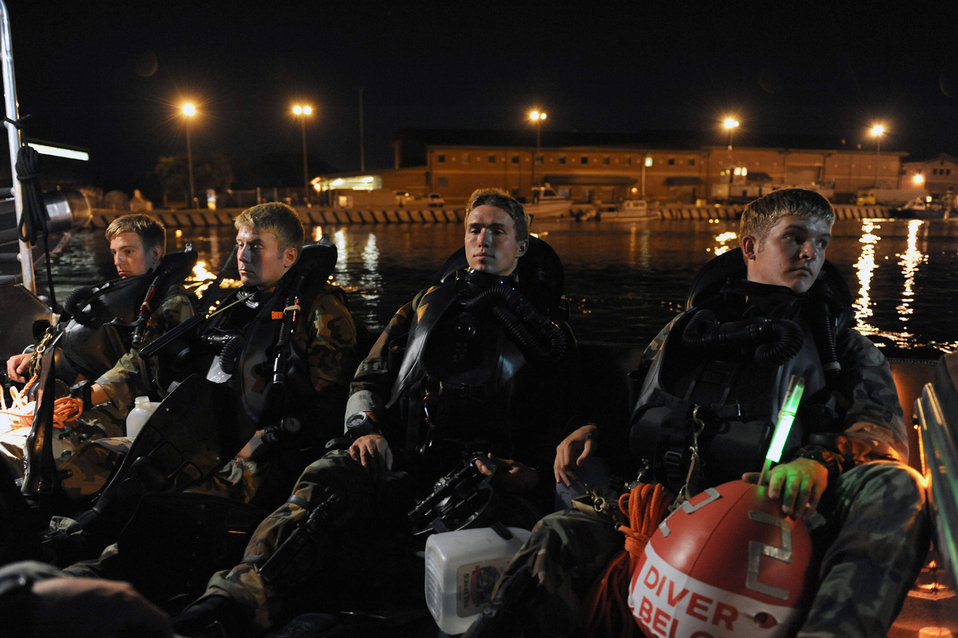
Tyndall Airmen prepare for morning dive

Combat controllers in training wait to be dropped off to do an early morning dive during their combat dive course June 10, 2010 at Panama City Beach, Fla. The Airmen are assigned to the 342nd Training Squadron Det 2.